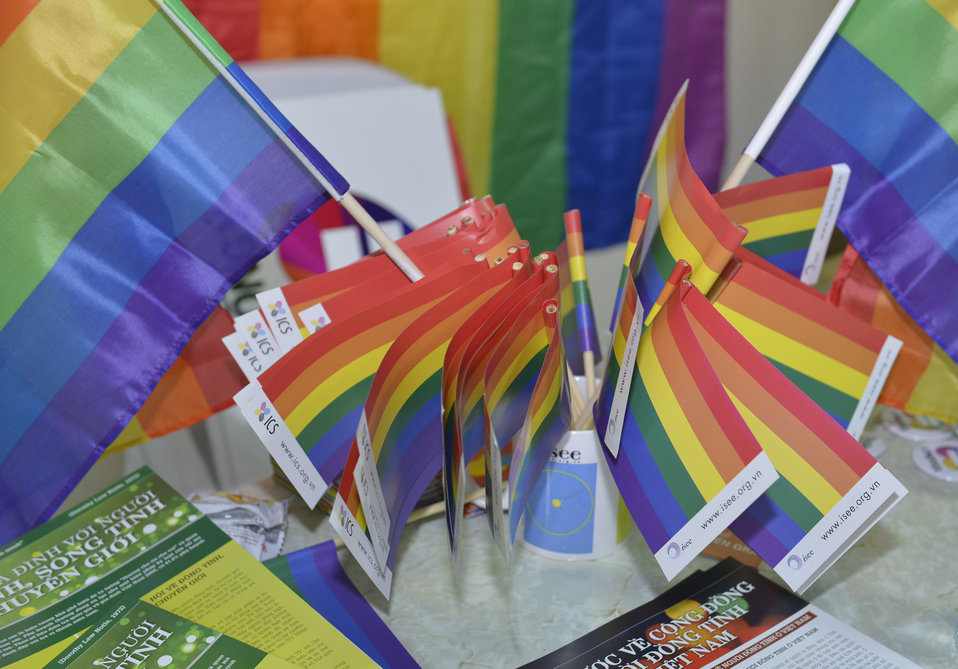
iSee LGBT Event

USAID Vietnam